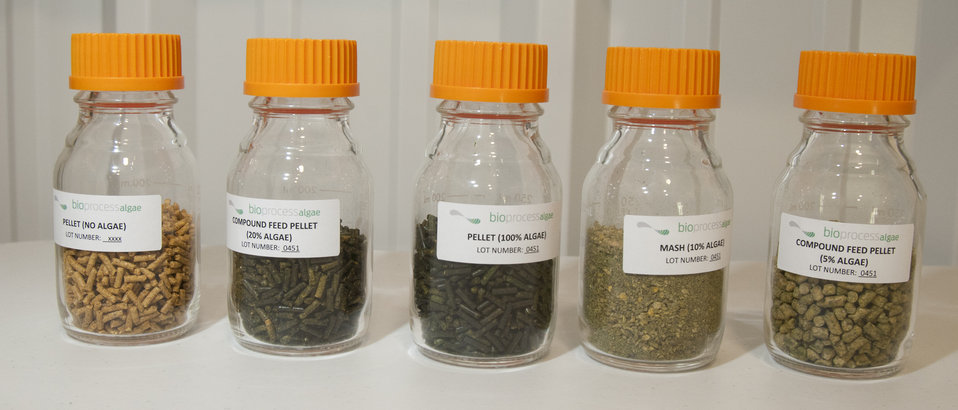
These are samples of animal feed produced from algae. Algae are high in quality protein, vitamins and other vital compounds that add value to animal feeds. Many species of algae produce large quantities of omega-3 fatty acids that are believed to beneficial for cardiovascular systems, immune systems, and cognitive development. Fish has long been the traditional source of omega-3s in human diets and now poultry feed can be enriched to produce omega-3 enriched eggs with algae. Agriculture Secretary Tom Vilsack toured the BioProcess Algae facility at Green Plains Renewable Energy (GPRE), Inc. on Friday, and Apr.15, 2011 in Shenandoah, IA that is producing such products.